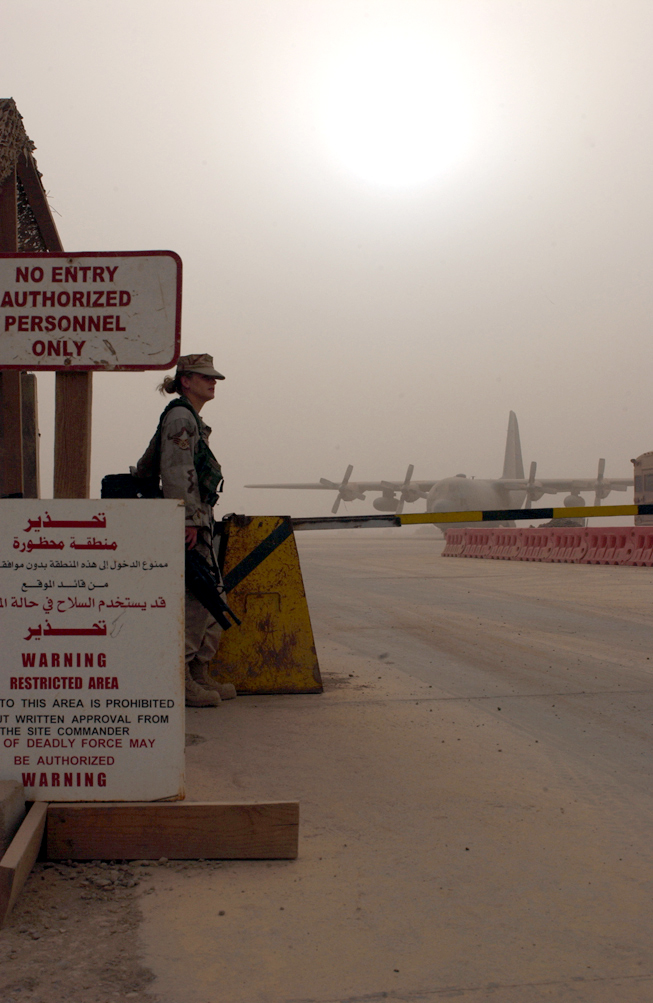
Desert dust in the wind

BAGHDAD, Iraq -- Senior Airman Dawn Lister guards the flightline entry control point as a fine, brown dust coats everything following a nightlong sandstorm recently. A C-130 Hercules sits grounded as a result of poor visibility. Airman Lister is assigned to the 447th Expeditionary Security Forces Squadron and is deployed from Minot Air Force Base, N.D. The C-130 is assigned to the 910th Airlift Wing in Youngstown, Ohio.